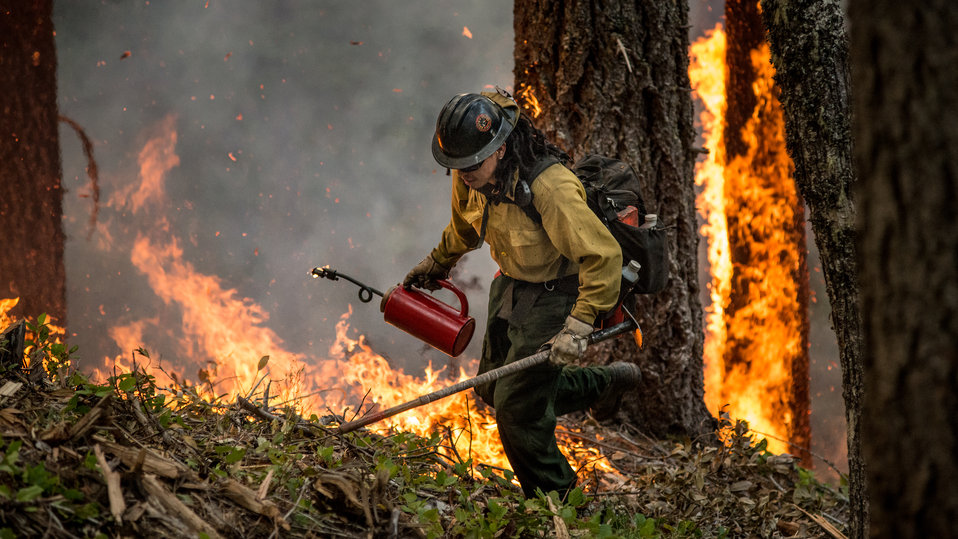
Geronimo Interagency Hotshot Crew, Department of the Interior (DOI) Indian Affairs (IA) Bureau of Indian Affairs (BIA) San Carlos Agency in Arizona; on assignment at the Big Windy Complex Wildlands Fire, approximately 15 miles west of Interstate-5 and East Northeast of Galice, Oregon, conducts a prescribed burn 'burnout' operation to help stop the main fire that may head toward this roadway, on Friday, Aug 9, 2013. The primary mission of the Interagency Hotshot Crews (IHC) is to provide a safe, organized, mobile and highly skilled hand crew for all phases of wildland fire suppression. The arduous duties and specialized assignments required of IHC personnel require uniform staffing, certification, training, equipment, communications, transportation, organization, and qualifications that adhere to interagency standards and guidelines.